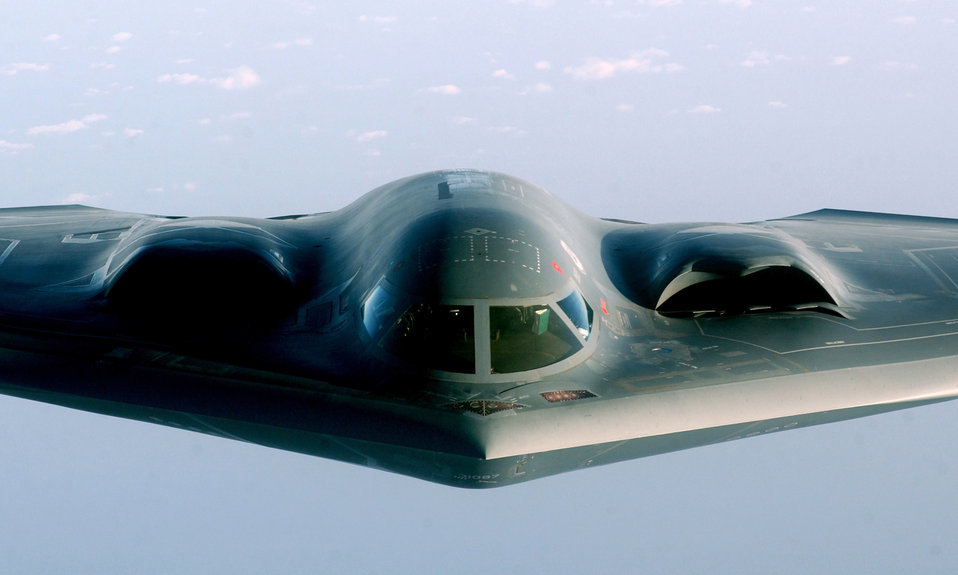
Return trip

OPERATION IRAQI FREEDOM -- A B-2 Spirit, returning from a mission over Iraq, takes on fuel from a KC-135 Stratotanker over the Indian Ocean on March 27, 2003.